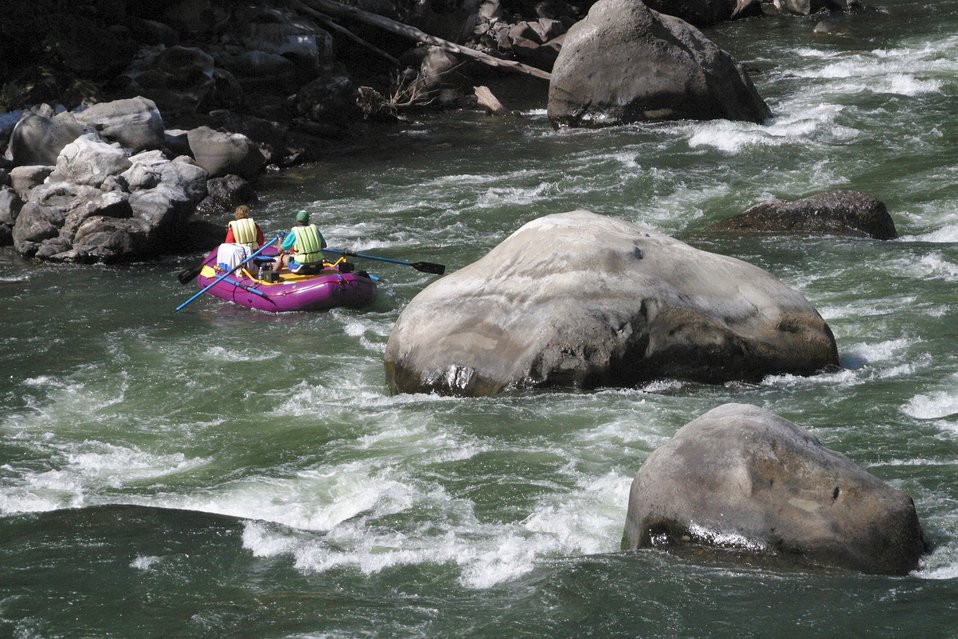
Boaters negotiate Blossom Rapids.